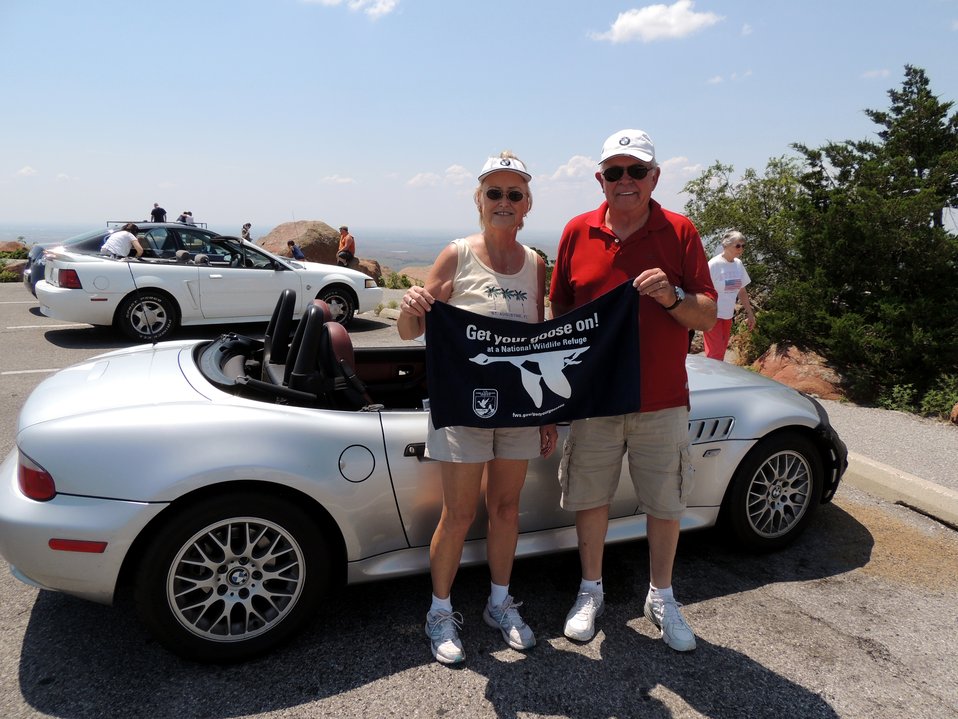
Get Your Goose On!

Wichita Mountains National Wildlife Refuge in Oklahoma.